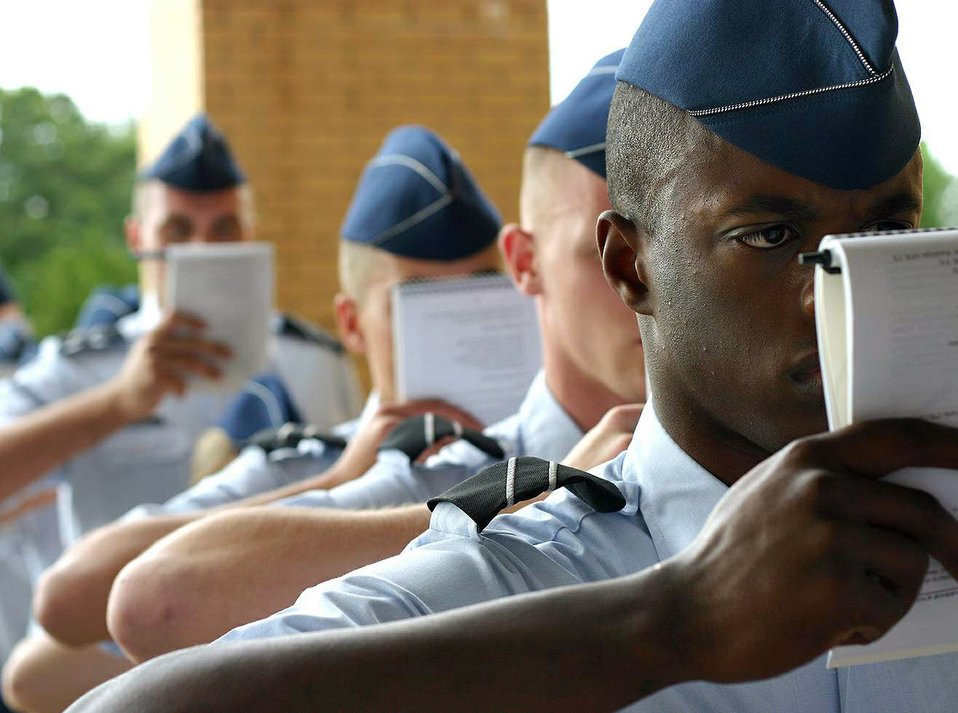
First wave of ROTC field training gets underway

Cadet Tony Nelson (right) and other Air Force ROTC cadets study their training manuals while waiting to in-process summer field training May 8 at Maxwell Air Force Base, Ala. More than 360 ROTC cadets, mostly rising juniors from 144 colleges nationwide, started off the first class of summer field training. Cadet Nelson is from Det. 765, The Citadel -- The Military College of South Carolina.